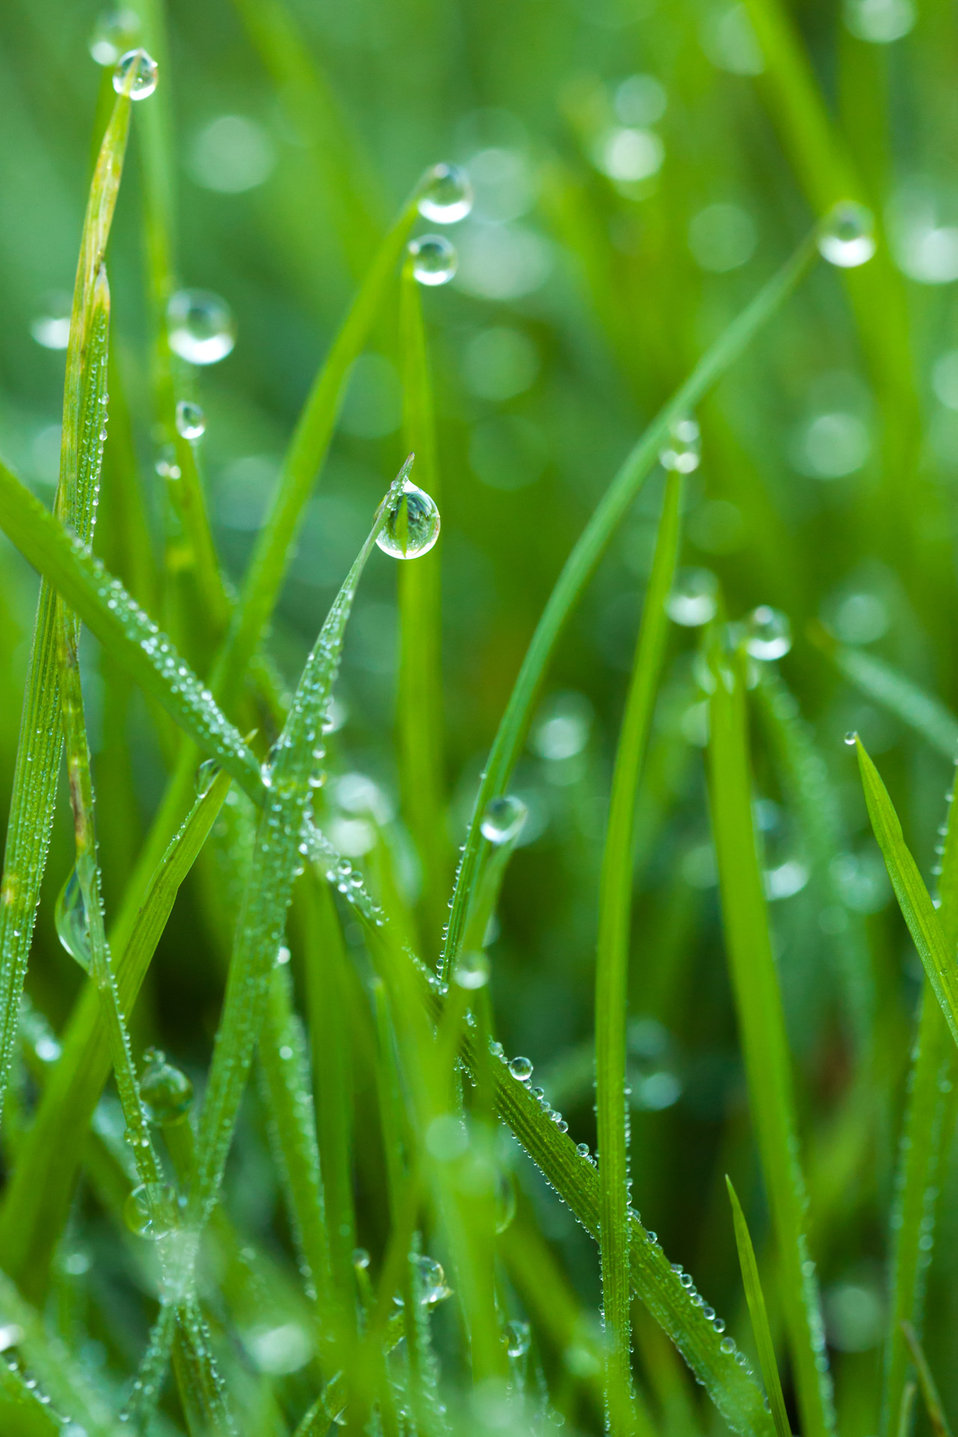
Morning dew on green grass.